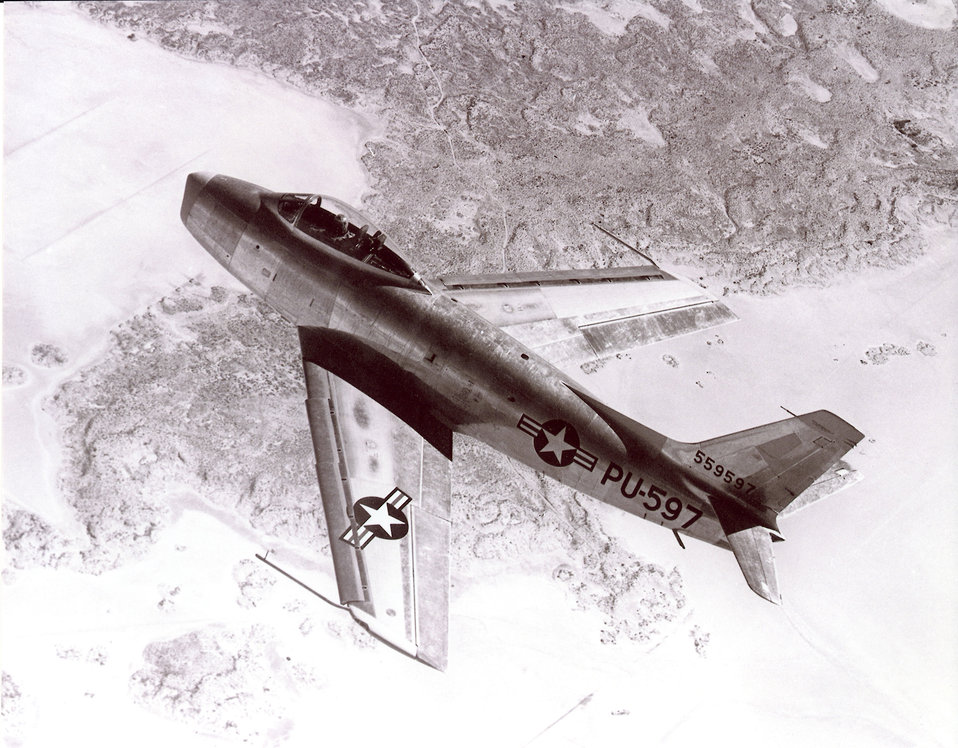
XP-86

The North American XP-86 made its first flight Oct. 1, 1947. In 1948, the Air Force changed the